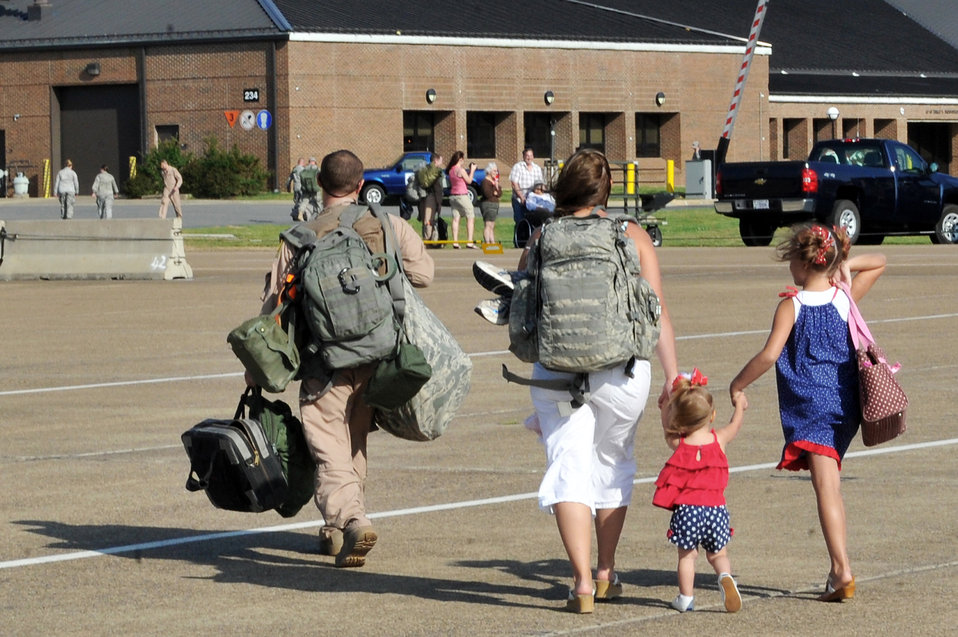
Returning home

Staff Sgt. John Carlin walks off the flightline with his family May 13, 2001, at Little Rock Air Force Base, Ark. Sergeant Carlin is assigned to the 61st Airlift Squadron.